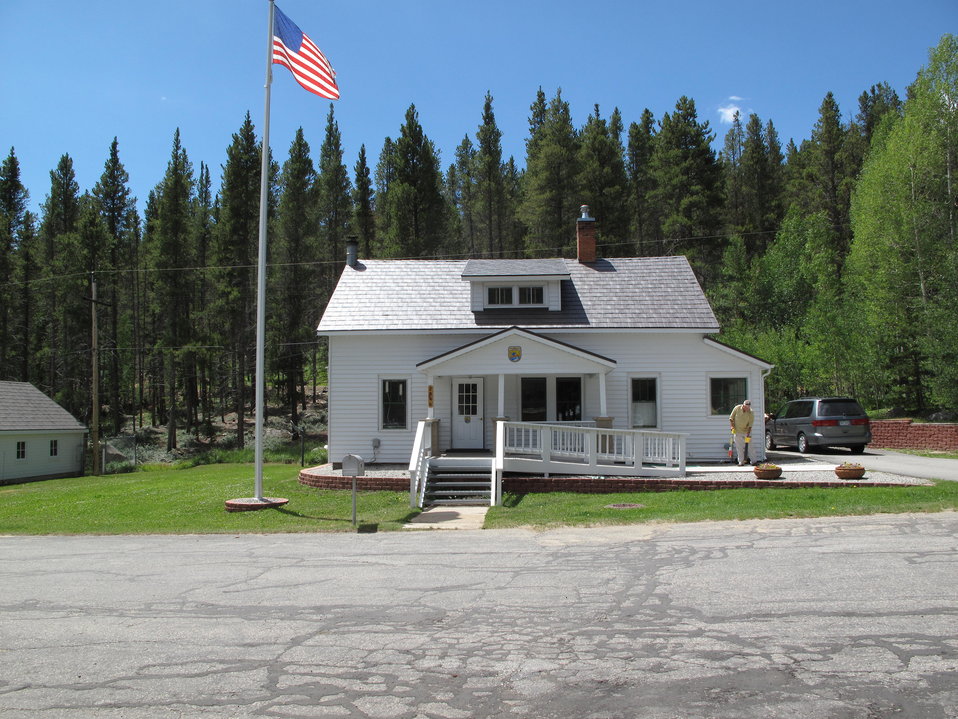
Leadville National Fish Hatchery

This is the main office. Behind this building is the trail head for a hiking trail.